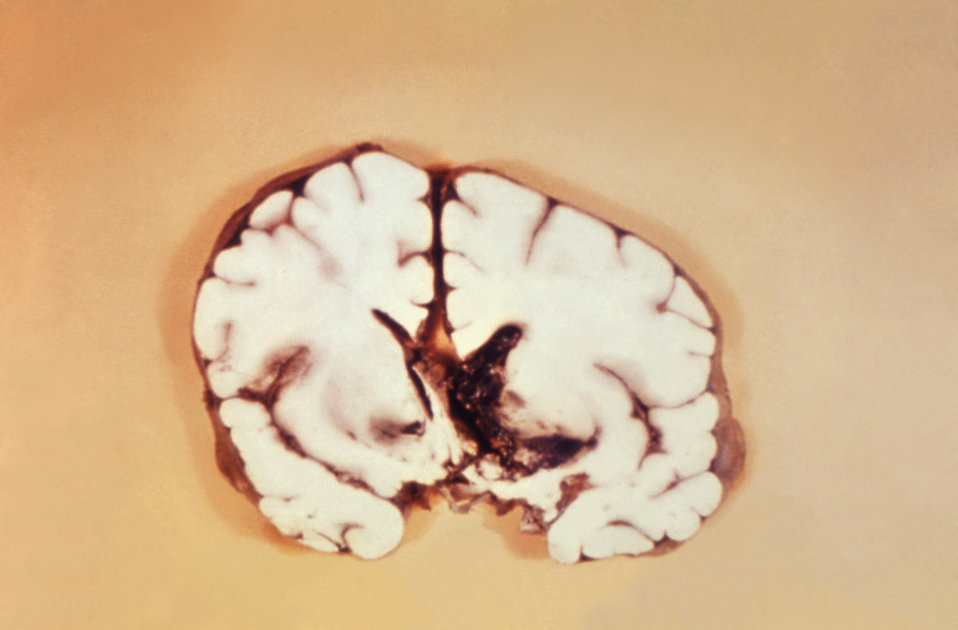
This is a brain section through the ventricles revealing an interventricular hemorrhage.